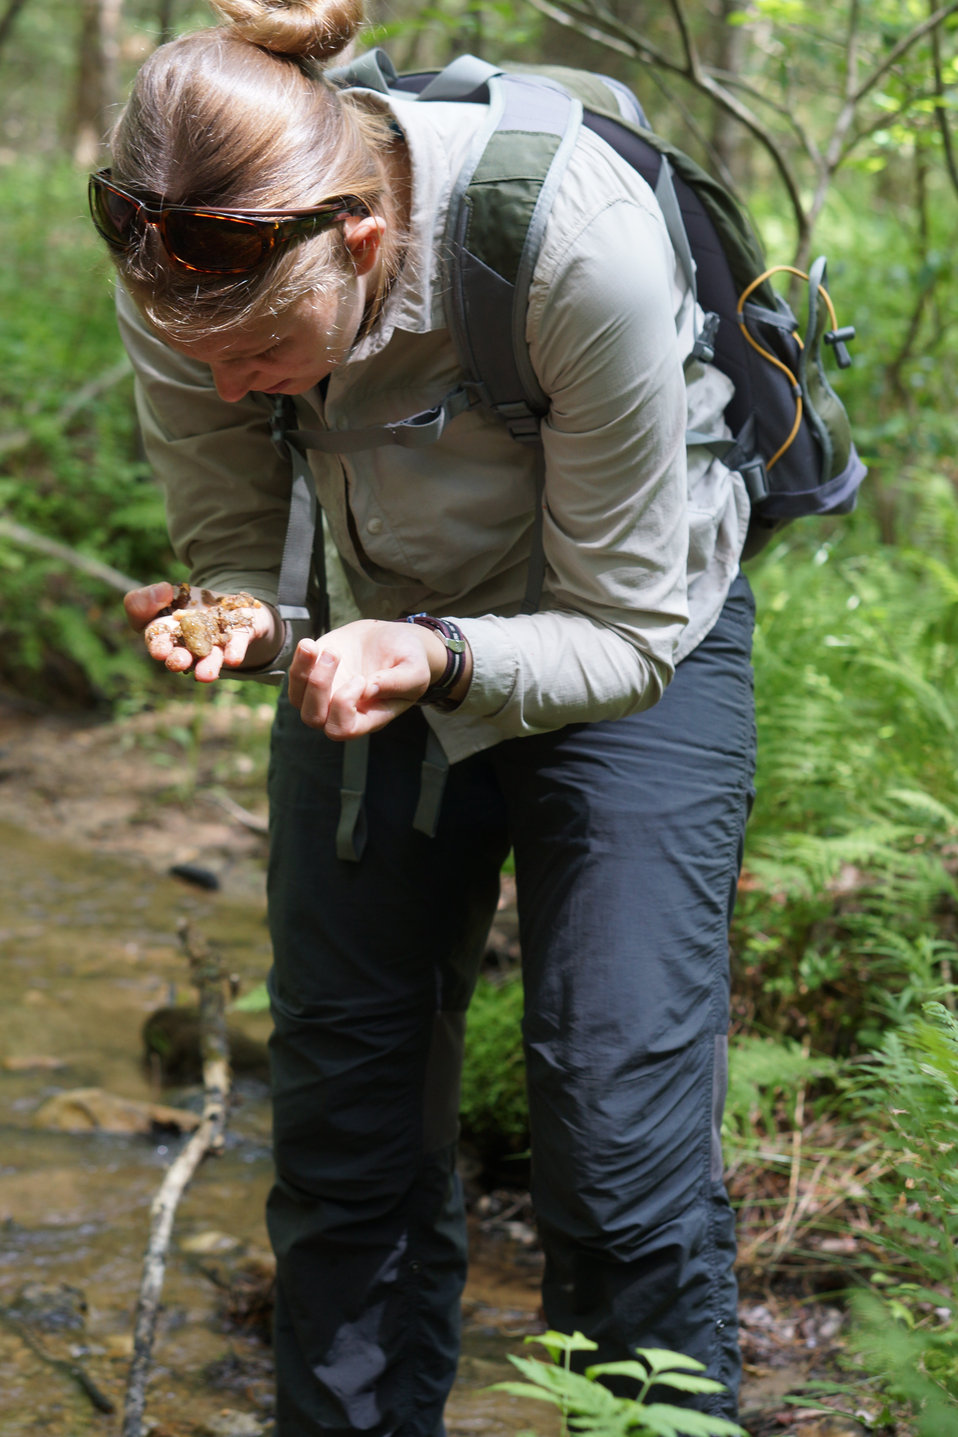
Emily Ulrich

In May, bog conservationists from Tennessee, North Carolina, and Georgia convened in the north Georgia mountains for the spring, 2014 meeting of the Bog Learning Network. The event provided an opportunity for biologists to see, first hand, the result of management efforts at two north Georgia bogs. More importantly, the outings provided an opportunity to share innovative approaches to bog management, such as the role of the Georgia Plant Conservation Alliance in conserving rare plants and coordinating a cadre of volunteers to work on bog management.

The Bog Learning Network was convened in the winter of 2013 as a way to bring together people working for bog conservation across the Southern Appalachians. Southern Appalachian bogs are one of North America’s rarest habitats and home to many rare plants and animals.